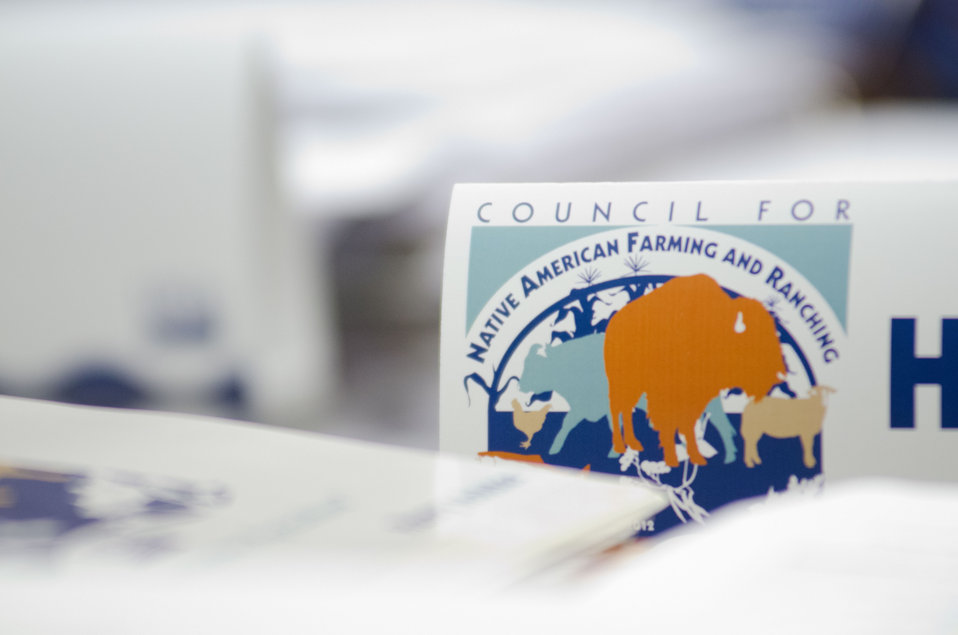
The first administrative/training meeting of the U.S. Department of Agriculture's (USDA) Council for Native American Farming and Ranching (CNAFR) is held on Monday, Aug. 13, 2012 at the USDA headquarters Whitten Building, in Washington, D.C. CNAFR was created to advise the Secretary on ways to eliminate barriers to participation for Native American Farmers and Ranchers in USDA programs. The Council was established as part of the Keepseagle settlement, and is conducted under the oversight of USDA's Office of Tribal Relations, which is part of the Office of the Secretary of Agriculture. The Director of Tribal Relations Joanna Mounce Stancil serves as Designated Federal Official (DFO) for the Council.